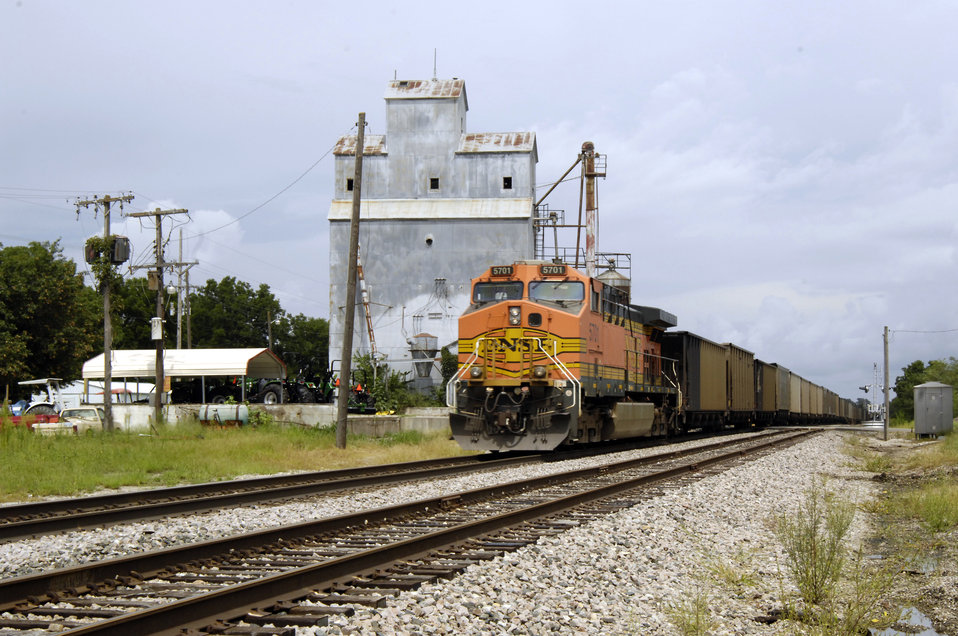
A freight train passes by a grain storage building in Prescott, Kansas on August 17, 2009.